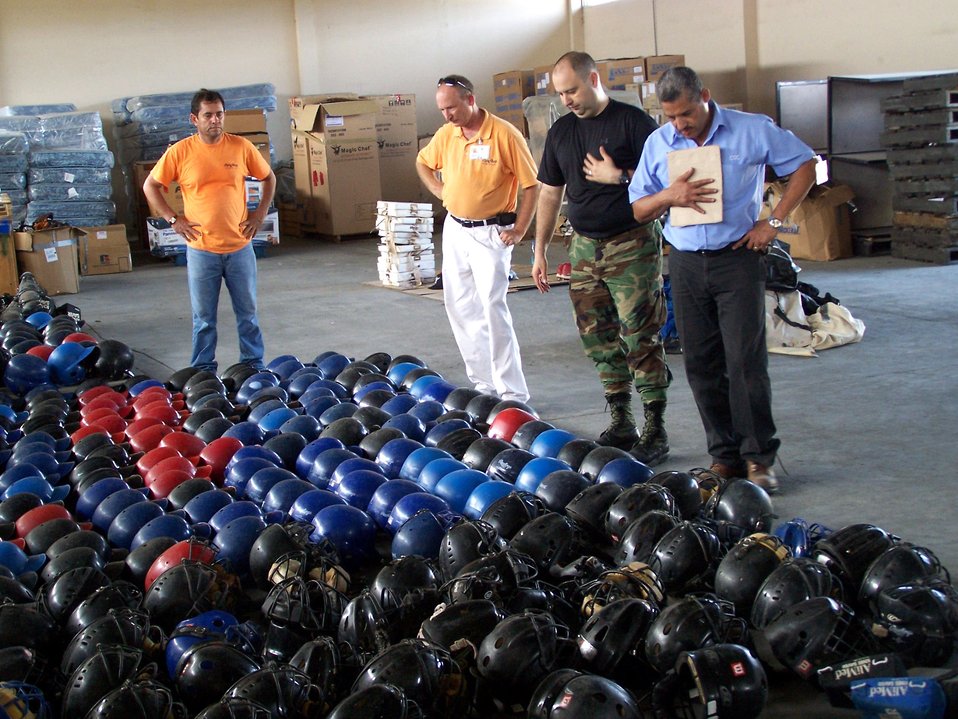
Manta Airmen score home run with community

Alfonso Ribot (right) inventories donated baseball equipment inside a warehouse alongside 478th Expeditionary Operations Squadron Commander Lt. Col. Javier Delucca (second from right) and two Dyncorp employees.